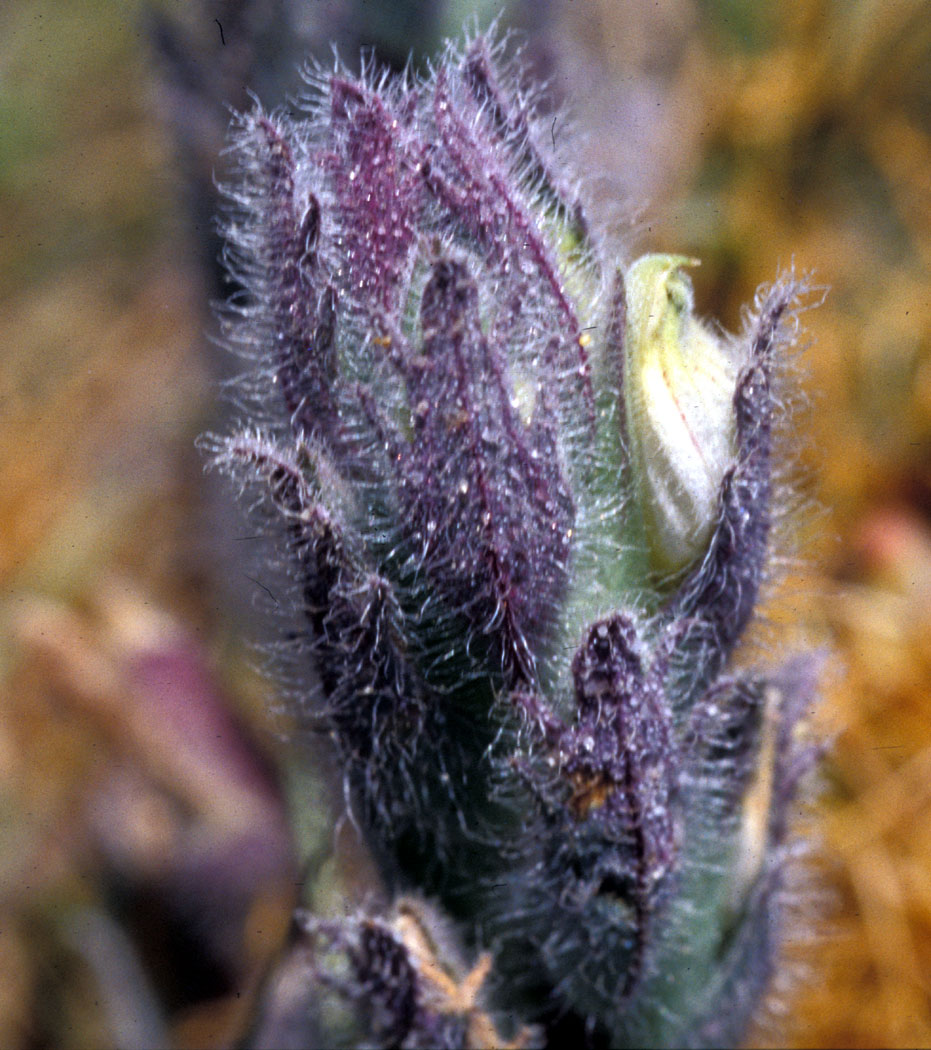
Soft bird's beak

Soft bird's-beak is an endangered plant found predominantly in the upper reaches of salt grass/pickleweed marshes at or near the limits of tidal action. Valary Bloom/USFWS